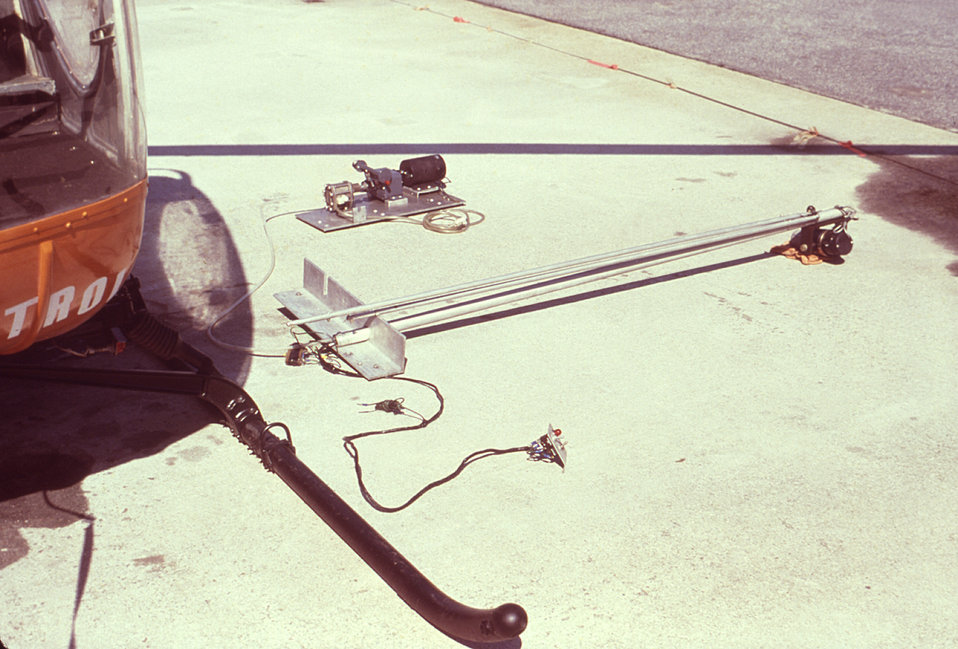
This photograph depicts a Hughes helicopter that had been outfitted with an ultra-low volume (ULV) insecticidal fog generator enabling it to be used to control populations of insect disease vectors.